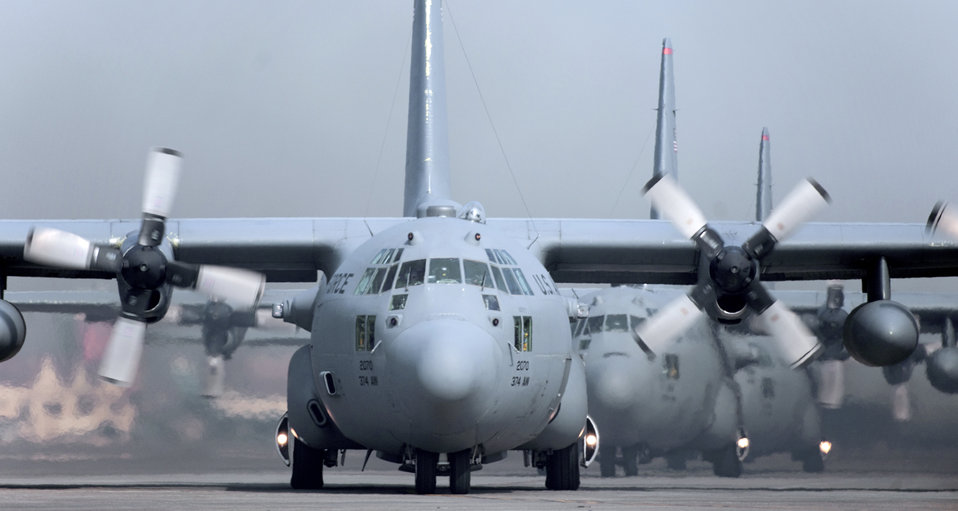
Yokota Airmen participate in large-force exercise

Five C-130 Hercules aircraft line up on the flightline before launching as part of a five-aircraft formation flight Feb. 23, 2010, at Yokota Air Base, Japan.